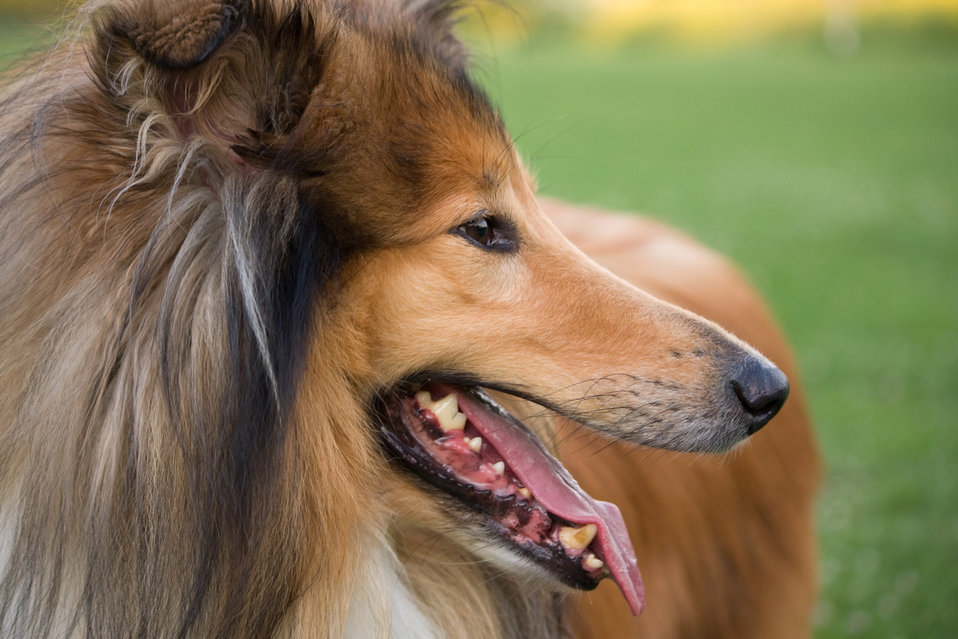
Rough collie dog

Beautiful close-up photo portrait of the head of a rough collie dog.